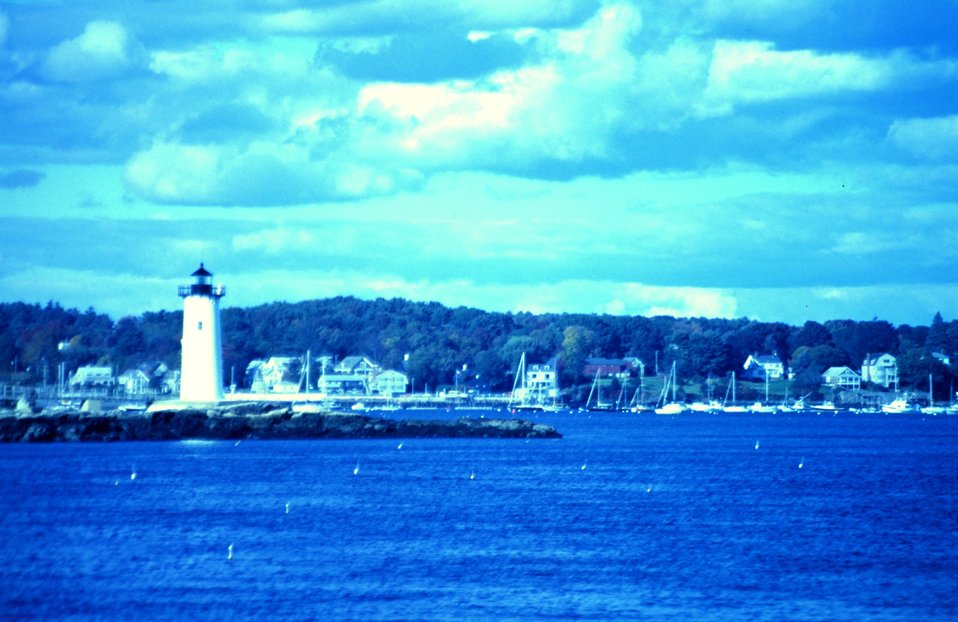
A view of the lighthouse guarding the harbor entrance.